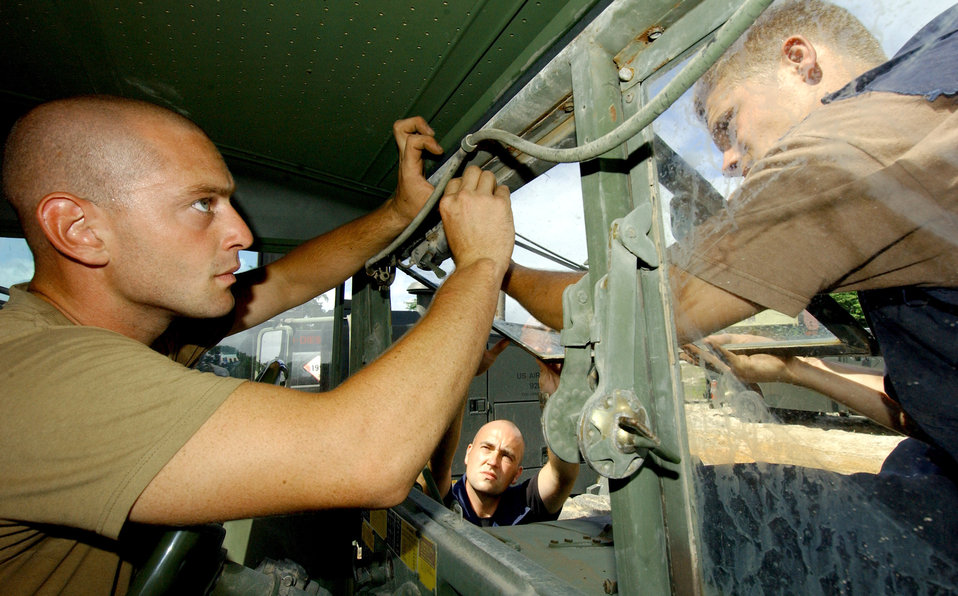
Helping in Guyana

CAMP STEPHENSON, Guyana -- (From left) Senior Airman Robert Lake, Staff Sgt. Christopher Tullos and Airman 1st Class Michael Harris repair a windshield here June 24 during exercise New Horizons 2004-Guyana. About 200 U.S. Airmen, Soldiers and Sailors are participating in the four-month joint training exercise co-sponsored by U.S. Southern Command and the Guyana defense force. A combined team of engineers and medics is working on construction projects and medical-training activities. The Airmen are assigned to the 820th Red Horse Squadron based at Nellis Air Force Base, Nev.